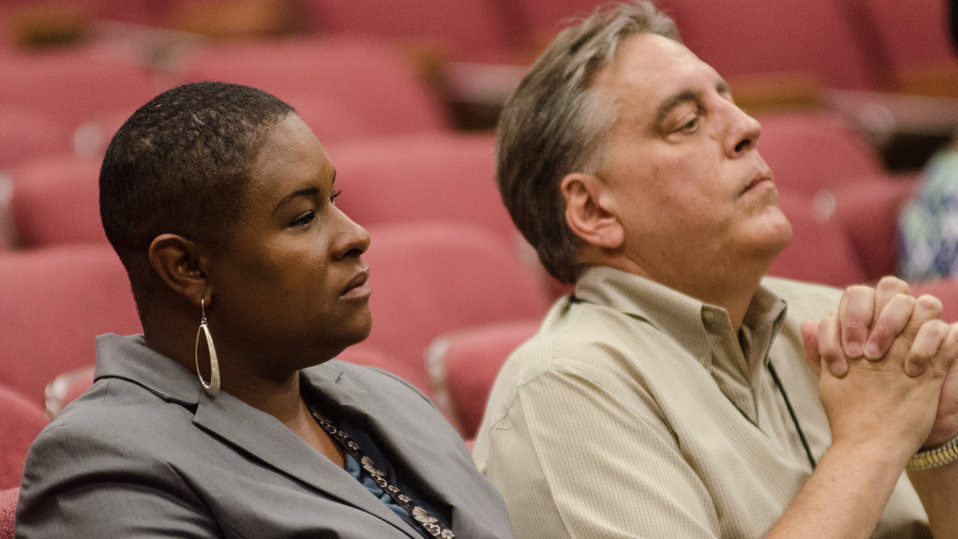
U.S. Department of Agriculture (USDA) employees listen to speakers at USDA’s RD 2nd Annual Cultural Transformation kickoff opening ceremony and forums, themed “Employees Influencing Change,” on Tuesday, Aug. 13, 2013 USDA in Washington, D.C.